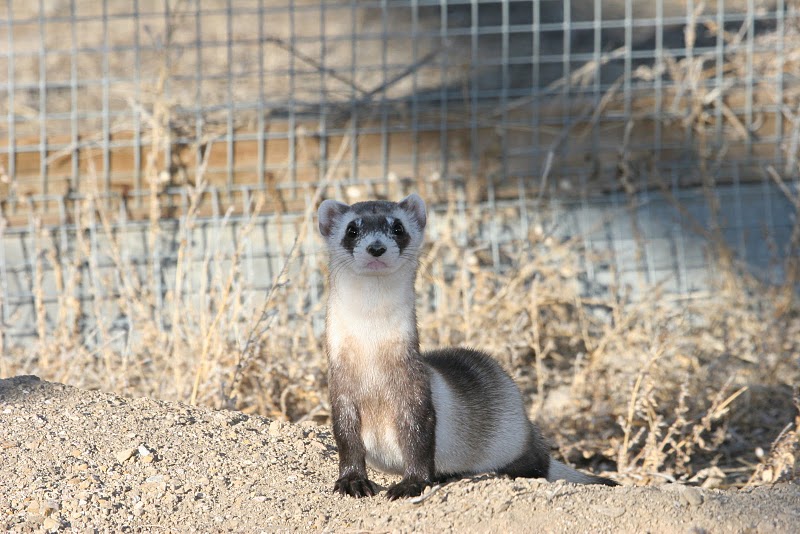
Black-footed Ferret